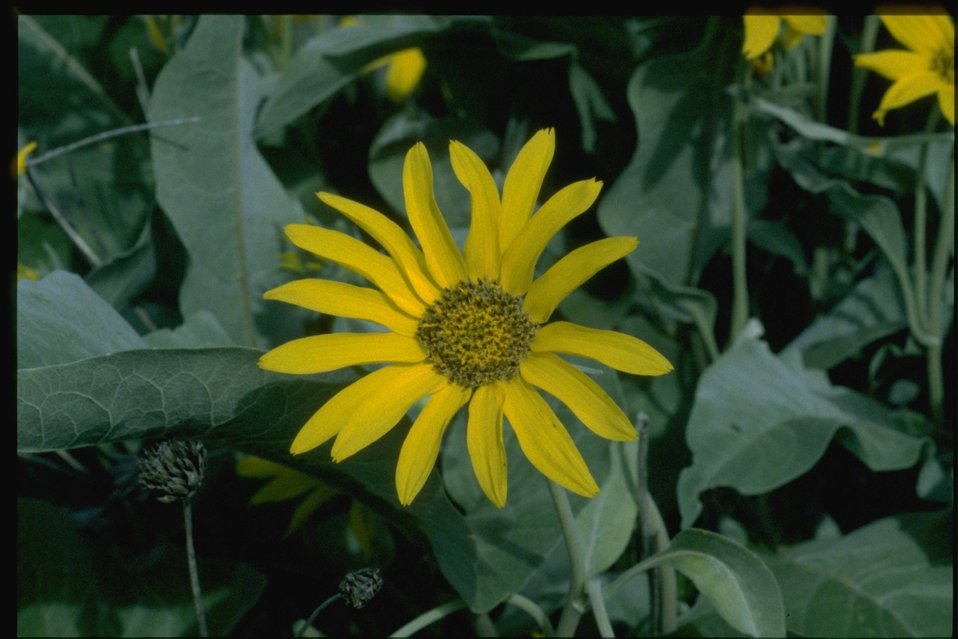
Closeup shot of Arrow-leaf balsamroot, Balsamorhiza sagittata.